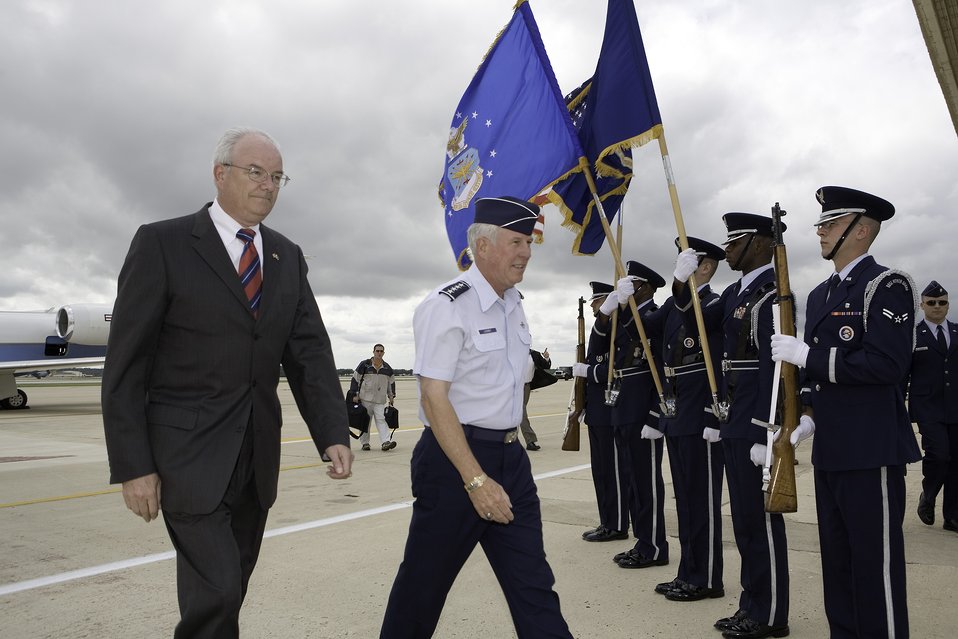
Secretary Wynne visits Lackland

Secretary of the Air Force Michael W. Wynne arrives at Lackland Air Force Base, Texas, and is met by Gen. William